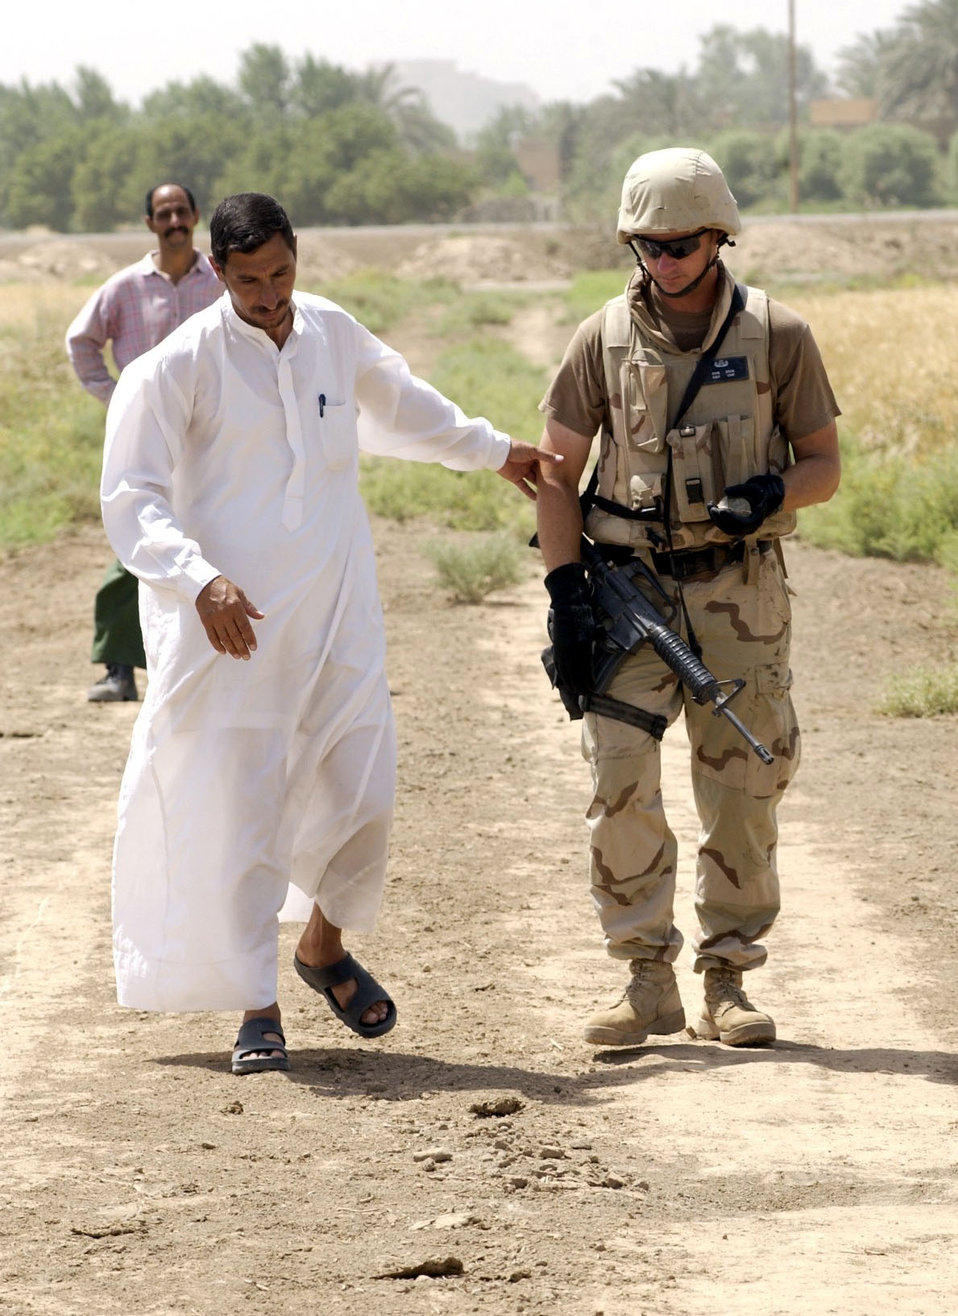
Talking to the locals

OPERATION IRAQI FREEDOM (AFPN) -- Staff Sgt. John F. Dziok discusses the locations of buried munitions with a local man at a forward-deployed location in Southwest Asia. Dziok is an explosive ordnance craftsman the 447th Expeditionary Civil Engineer Squadron. He is deployed from the 43rd CES at Pope Air Force Base, N.C.